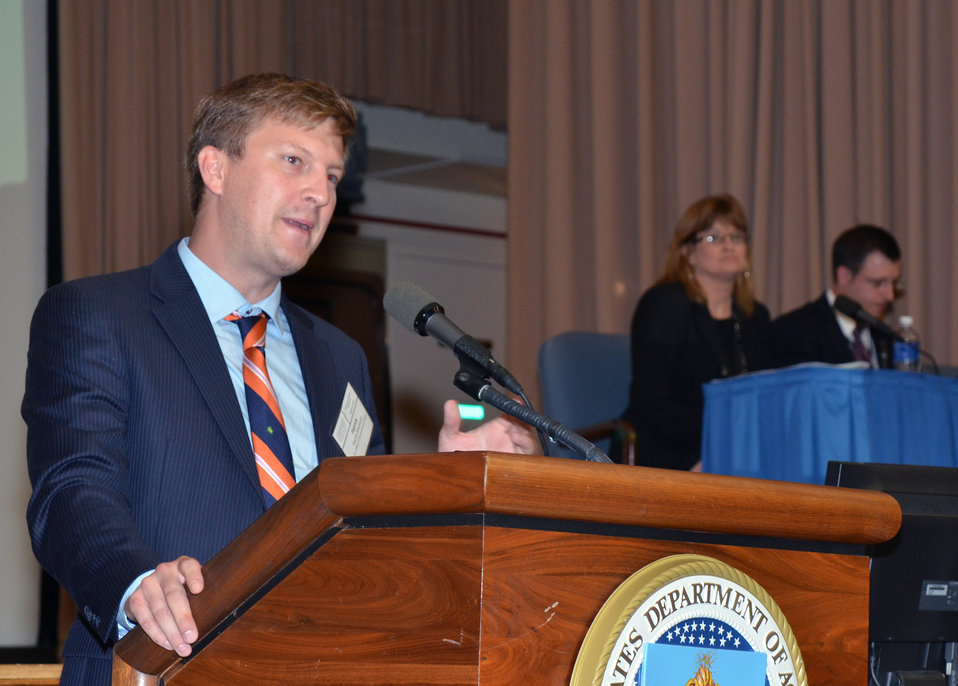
A speaker at the U.S. Office of Government Ethics training Preventing Conflict of Interest in the Executive Branch at the Jefferson Auditorium at the U.S. Department of Agriculture (USDA) in Washington, D.C. on Wednesday, Aug. 21, 2013.